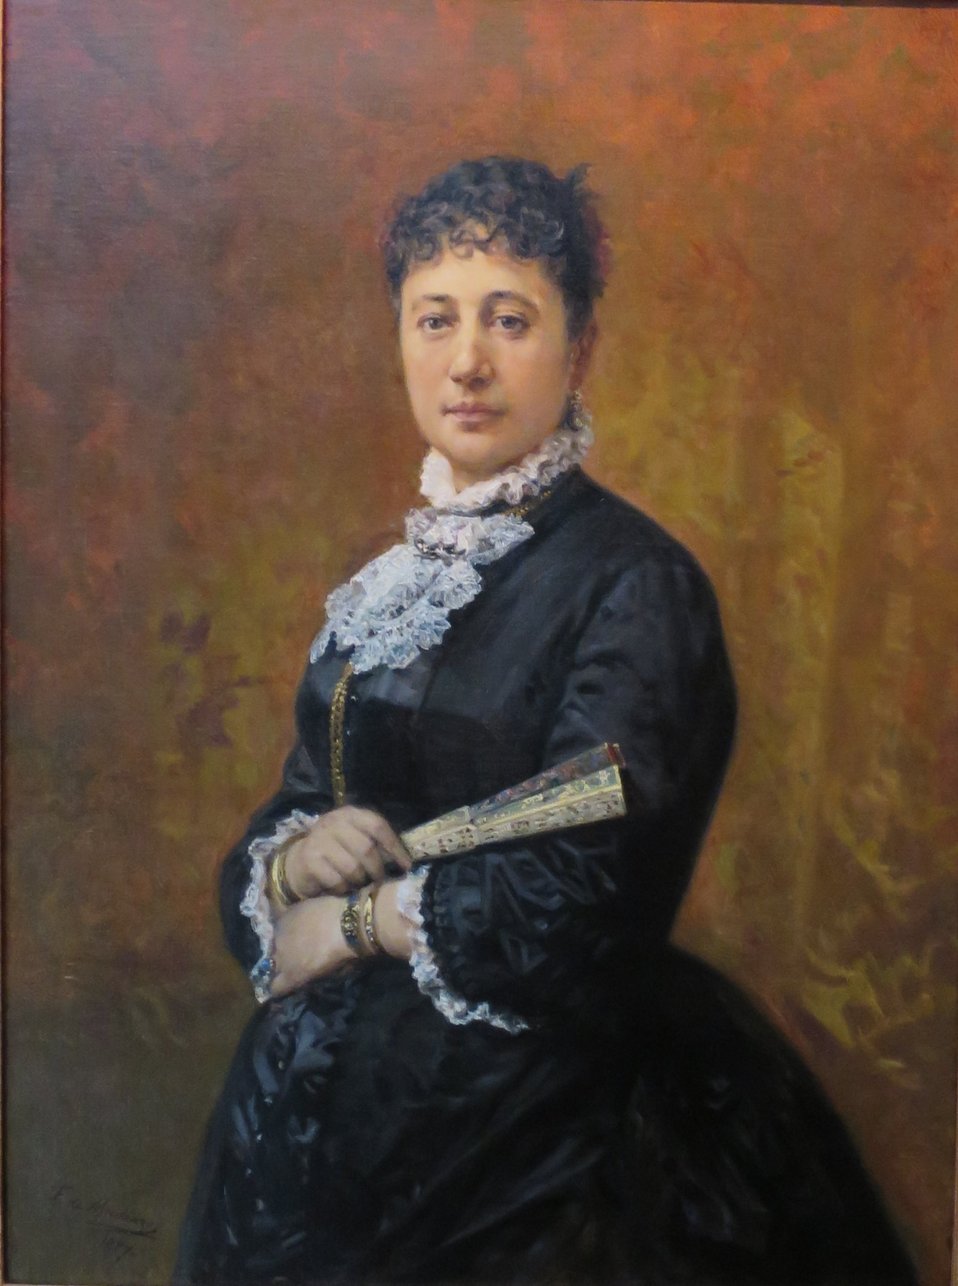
Portrait of Bernice Pauahi Bishop painted by Frederico de Madrazo from a photograph, 1887, Bernice P. Bishop Museum